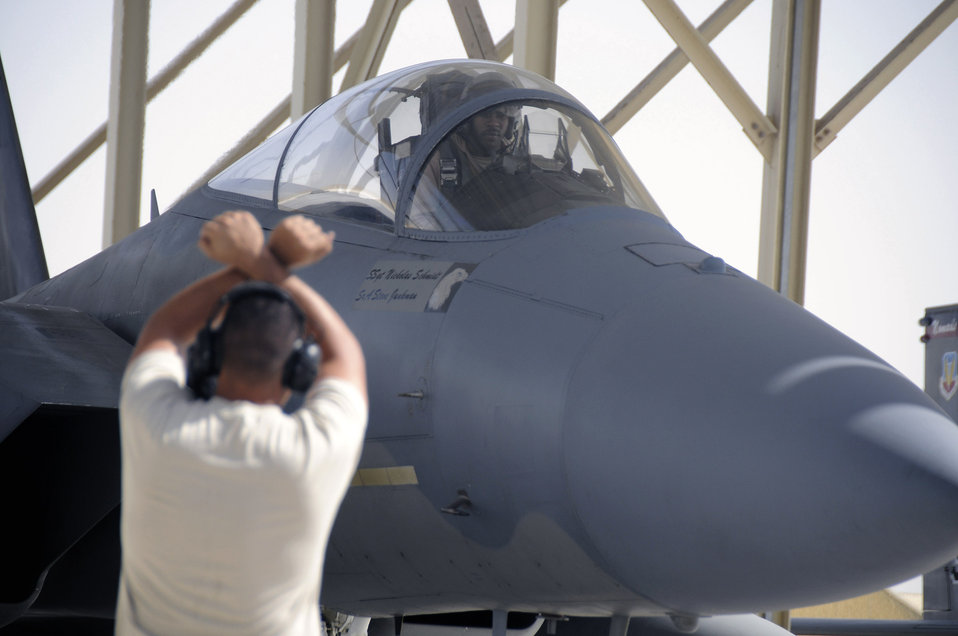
Airmen provide key support to multinational exercise

Capt. Rick Jones looks to Staff Sgt. Mike Membrilla for directions to safely maneuver his F-15 Eagle onto the runway Nov. 13 at an air base in Southwest Asia. Captain Jones and Sergeant Membrilla are members of the 58th Fighter Squadron from Eglin Air Force Base, Fla. They are deployed here in support of a multinational exercise.